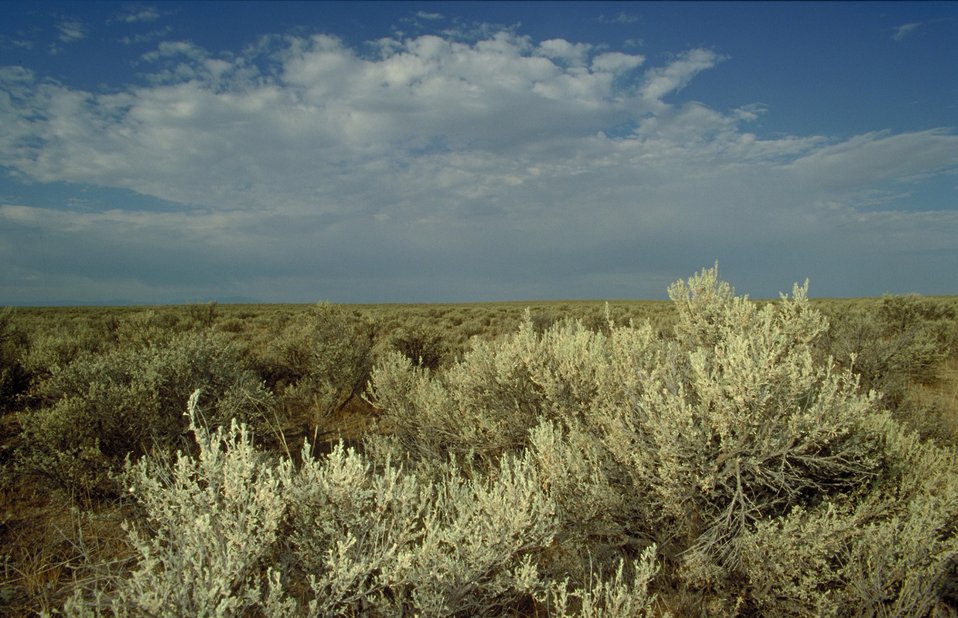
Fuels of brush Fire Season 2000 Lower Snake River District LSRD